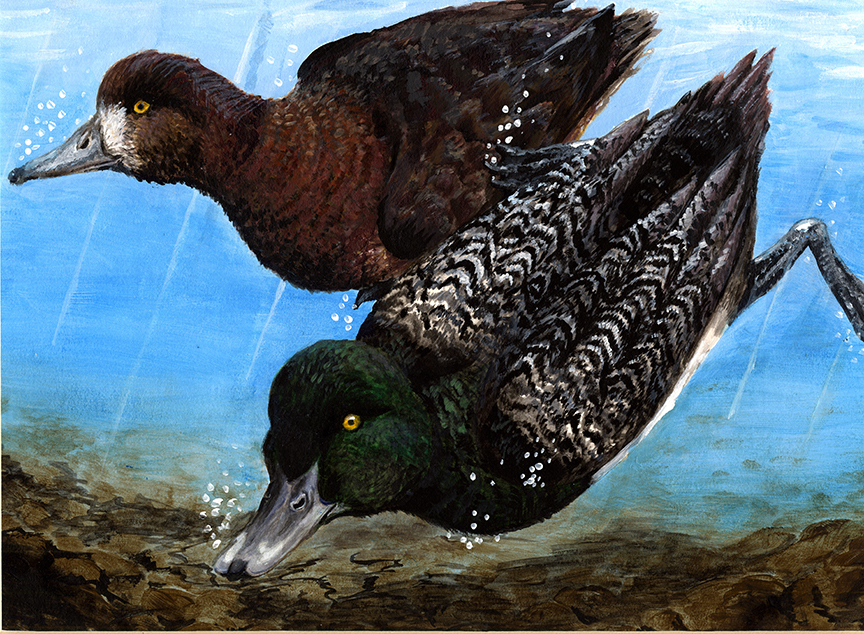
JRDuck2013VA

2013 Junior Duck Stamp Best of Show-Virginia